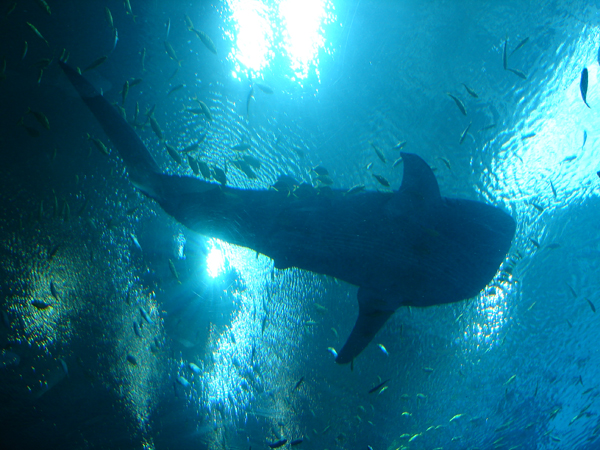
Photo by Angela Grider. Whale Shark at the Georgia Aquarium in the Ocean Voyager tunnel.